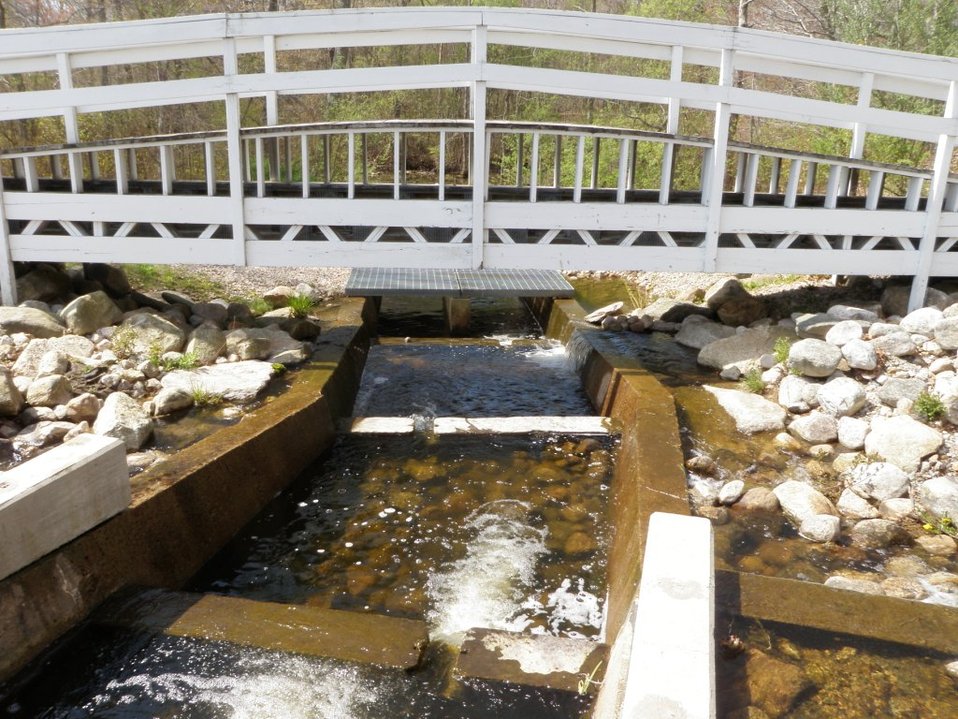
Small pool type ladder in RI